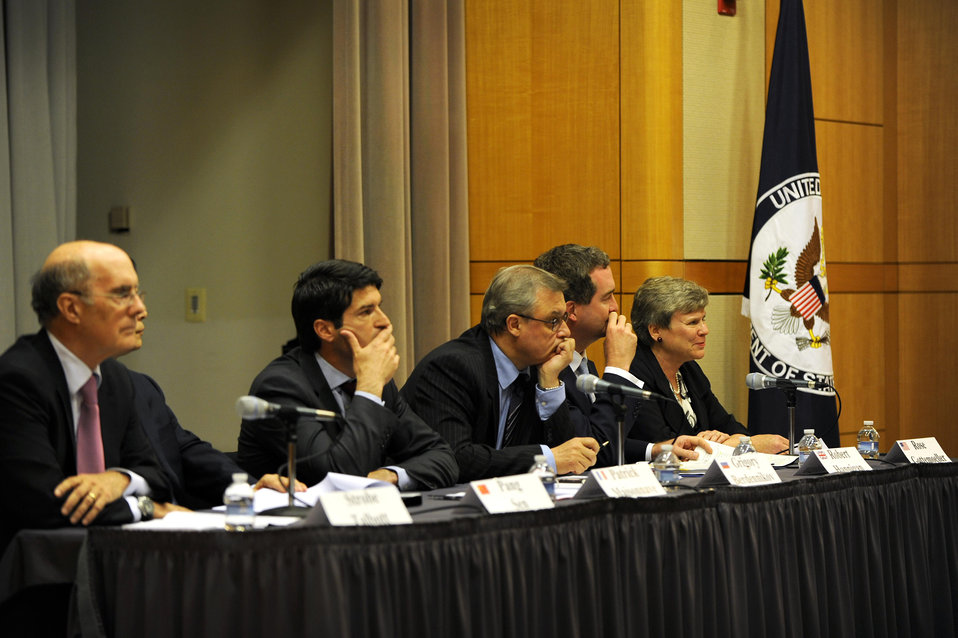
P5 Conference Public Event

The heads of each P5 delegation discuss the efforts of their nation, as well as the collective efforts of the P5, to fulfill their Nuclear Non-Proliferation Treaty Article VI and other commitments, during a public event at the U.S. Department of State in Washington, D.C., June 27, 2012. From left to right: Strobe Talbott, President, Brookings Institution (moderator); Pang Sen, Director-General, Arms Control and Disarmament Department, Chinese Ministry of Foreign Affairs; Patrick Maisonnave, Director for Strategic, Security and Disarmament Affairs, French Ministry of Foreign Affairs; Ambassador Grigory Berdennikov, Ambassador-at-Large, Russian Ministry of Foreign Affairs; Robert Hannigan, Director General, Defence and Intelligence, British Foreign & Commonwealth Office; Rose Gottemoeller, Acting Under Secretary of State for Arms Control and International Security, U.S. Department of State.